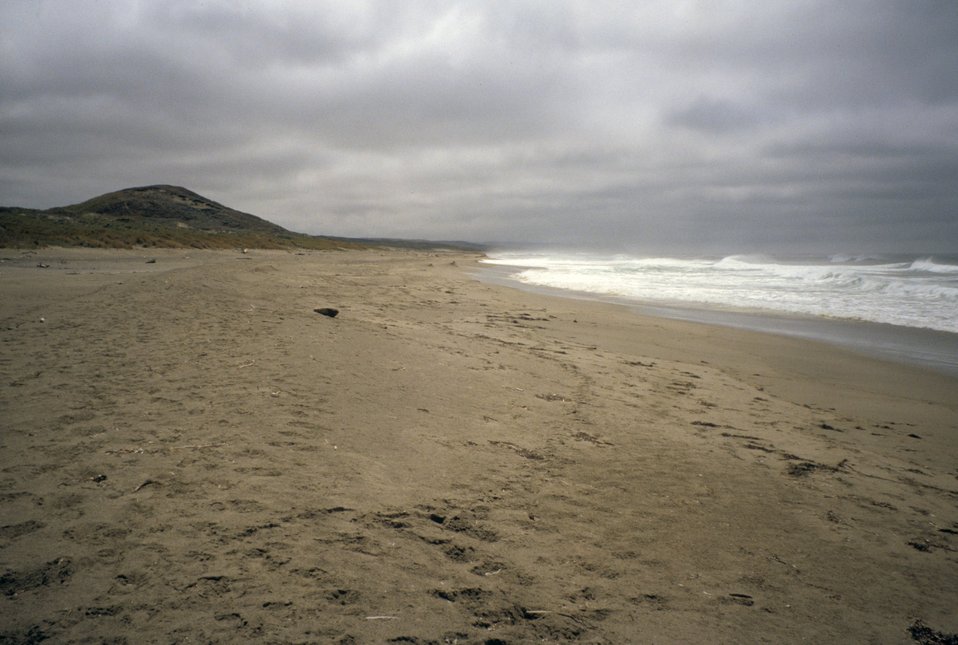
Point Reyes Great Beach